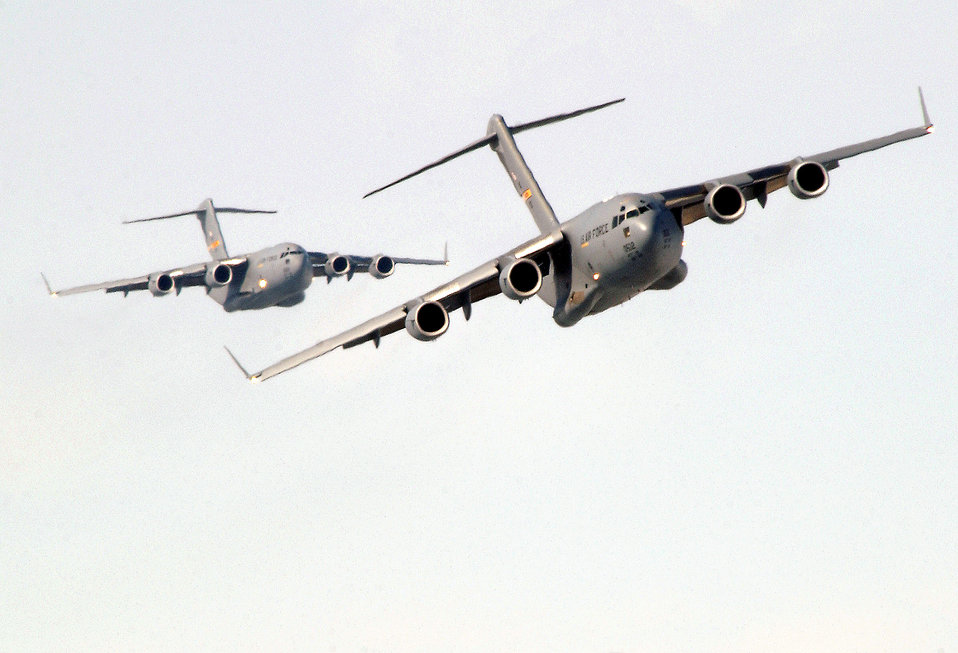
Training Globemasters

OVER SOUTH CAROLINA -- Two C-17 Globemaster IIIs participate in a training airdrop formation July 27. In all, nine C-17s from the 437th Airlift Wing at Charleston Air Force Base, S.C., took part. The scheduled airdrop took place over North Field, S.C.